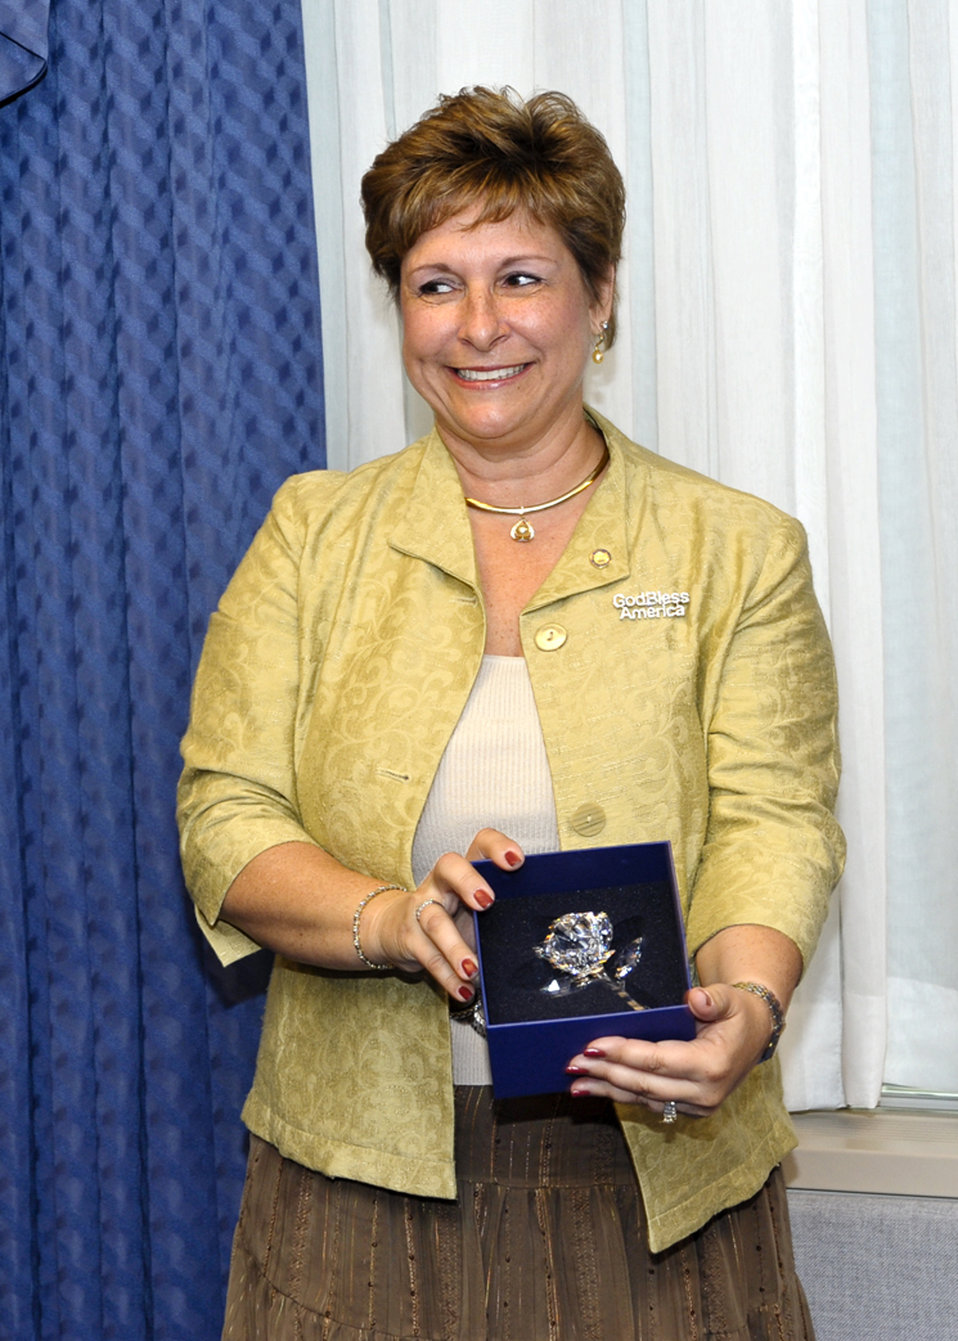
O'Malley Award

Marianne Williams, wife of Brig. Gen. Brett Williams, shows the crystal rose she received after the couple was honored with the 2009 General and Mrs. Jerome O'Malley Award during a ceremony in the Pentagon Sept. 11, 2009. The rose was presented to Mrs. Williams by Sharon O'Malley Burg to carry on the O'Malley legacy.